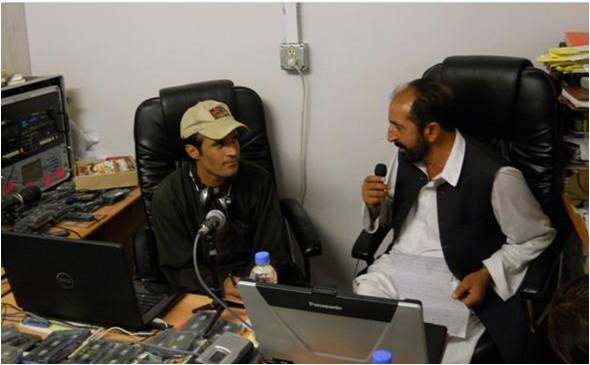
Chief Prosecutor Takes Anti-corruption Campaign to the Airwaves